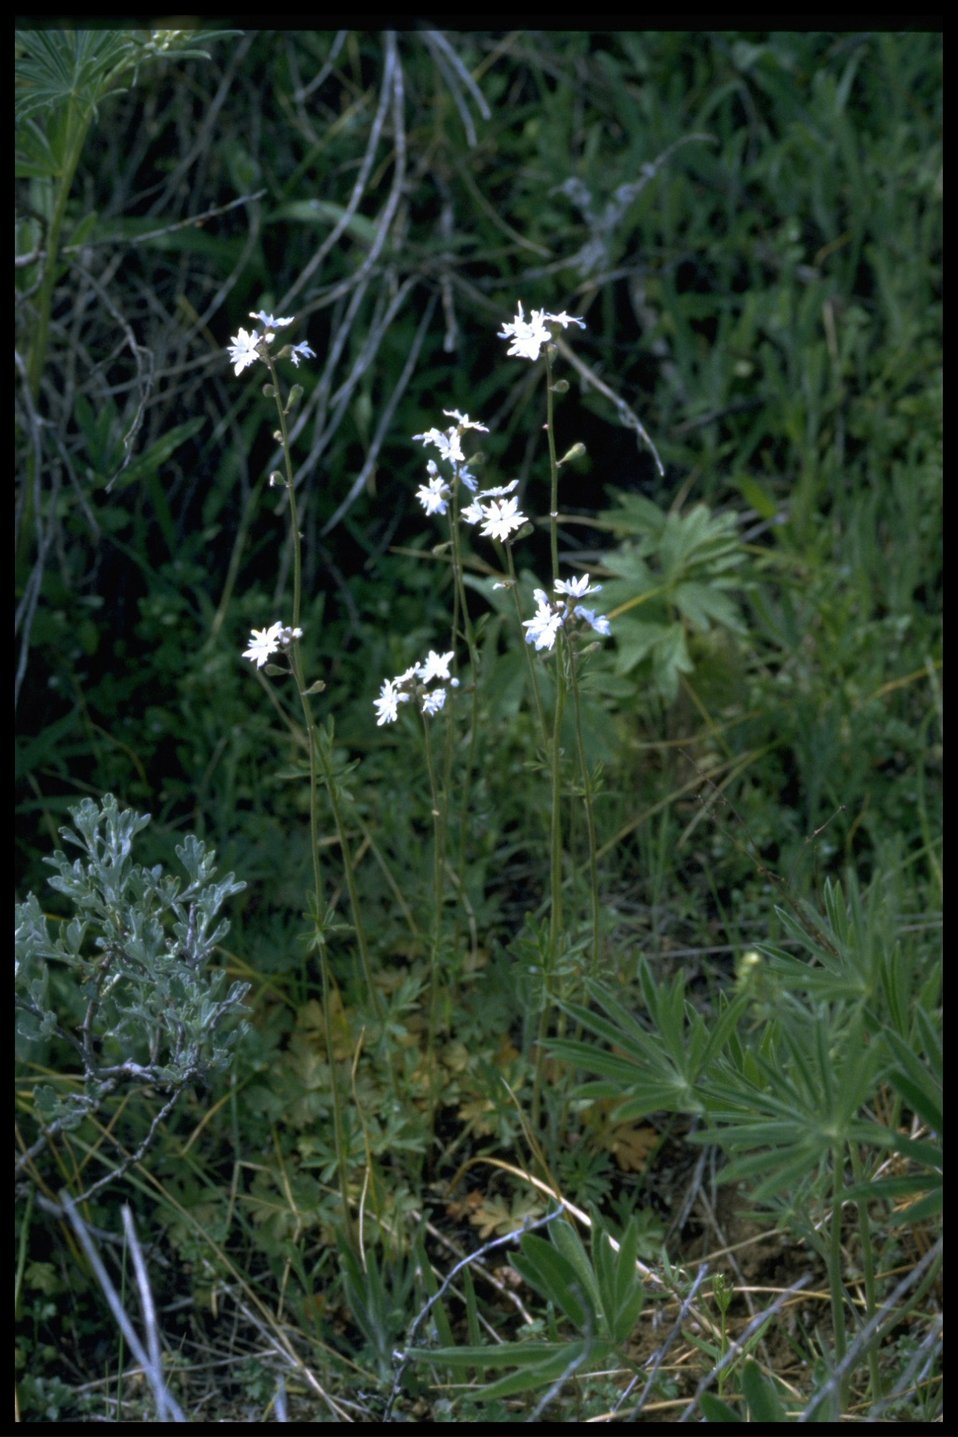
Farshot of Prairie Star wildflowers.